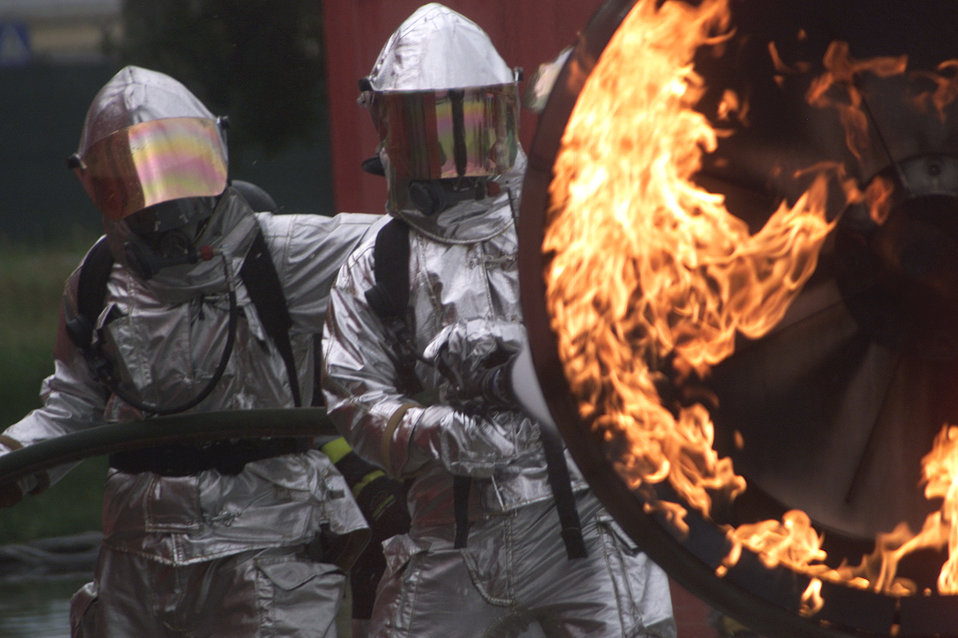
Training in flames

RHEIN-MAIN AIR BASE, Germany -- Airman 1st Class Joshua Hosack (left) and Maj. Shawn Moore practice the proper techniques to extinguish an aircraft engine fire at the Frankfurt International Airport's fire department training area Aug. 24. The Rhein-Main Fire Department conducted four days of classroom and live-fire training with instructors from the airport. The Airmen are assigned to the 469th Air Base Group's civil engineer flight.